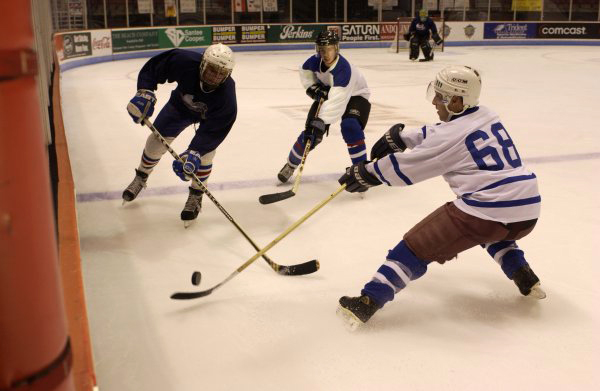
Hockey time

CHARLESTON, S.C. -- Paul Goff, No. 68, and Russ Killpartrick fight a Navy defender for control of the puck. The Airmen prevailed and scored the third goal of the game. The Air Force hockey team is from nearby Charleston Air Force Base. They defeated the Navy team 6-5.